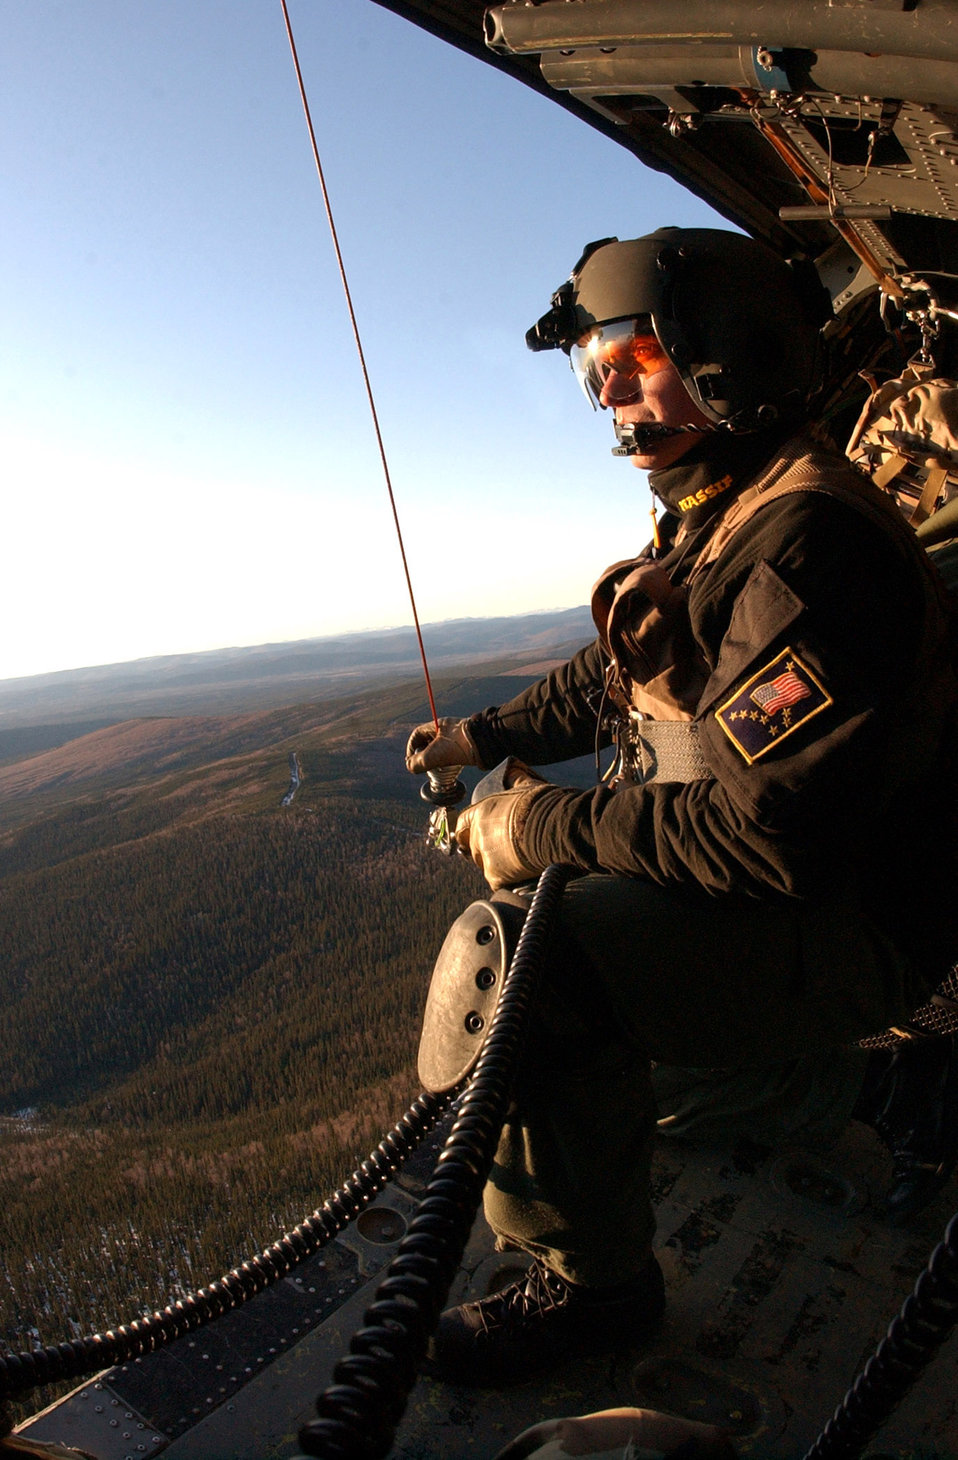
Making a rescue

Staff Sgt. Dave Torrance prepares to lower a hoist from an HH-60G Pave Hawk helicopter to lift a pararescuemen during a combat search and rescue mission April 17 at Eielson Air Force Base, Alaska. Sergeant Torrance is a flight engineer with the 210th Rescue Squadron's Detachment 1.